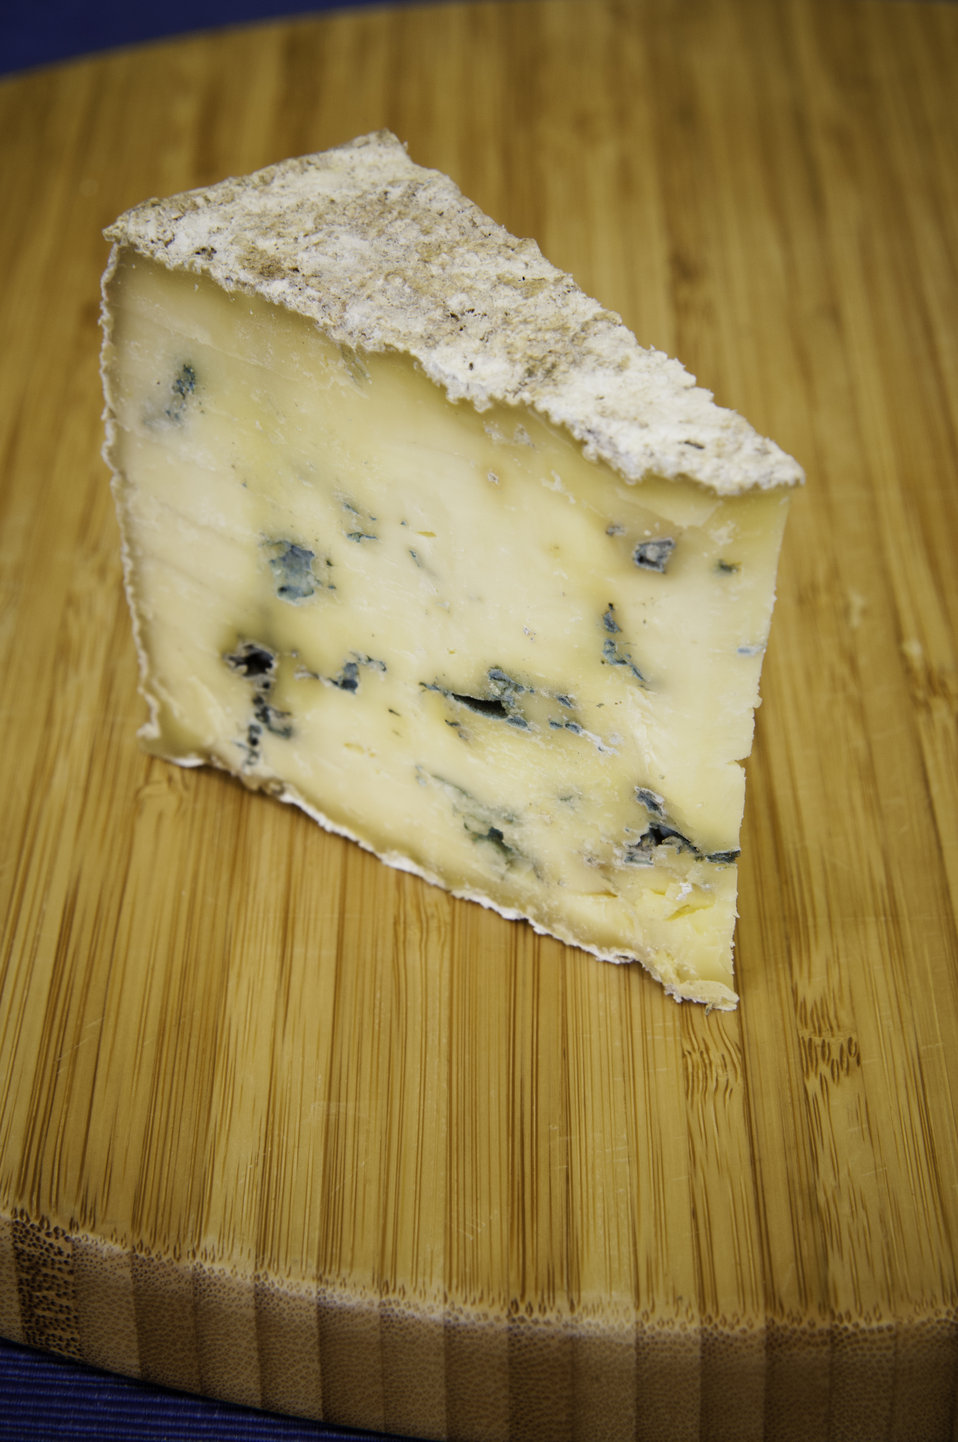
Chapel’s Country Creamery ages their Chapelle, Talbot Reserve and Bay Blue in a climate-controlled cave, which gives the cheese its unique flavor. The cave-aged cheeses develop their own natural rind. The dairy starts with fresh raw milk produced on their Grade A dairy farm in Easton, MD. The dairy herd contains grass fed Jersey and Holstein cows that produce high quality milk, rich in cream. The milk is all-natural and contains no synthetic hormones, antibiotics, or chemical compounds.